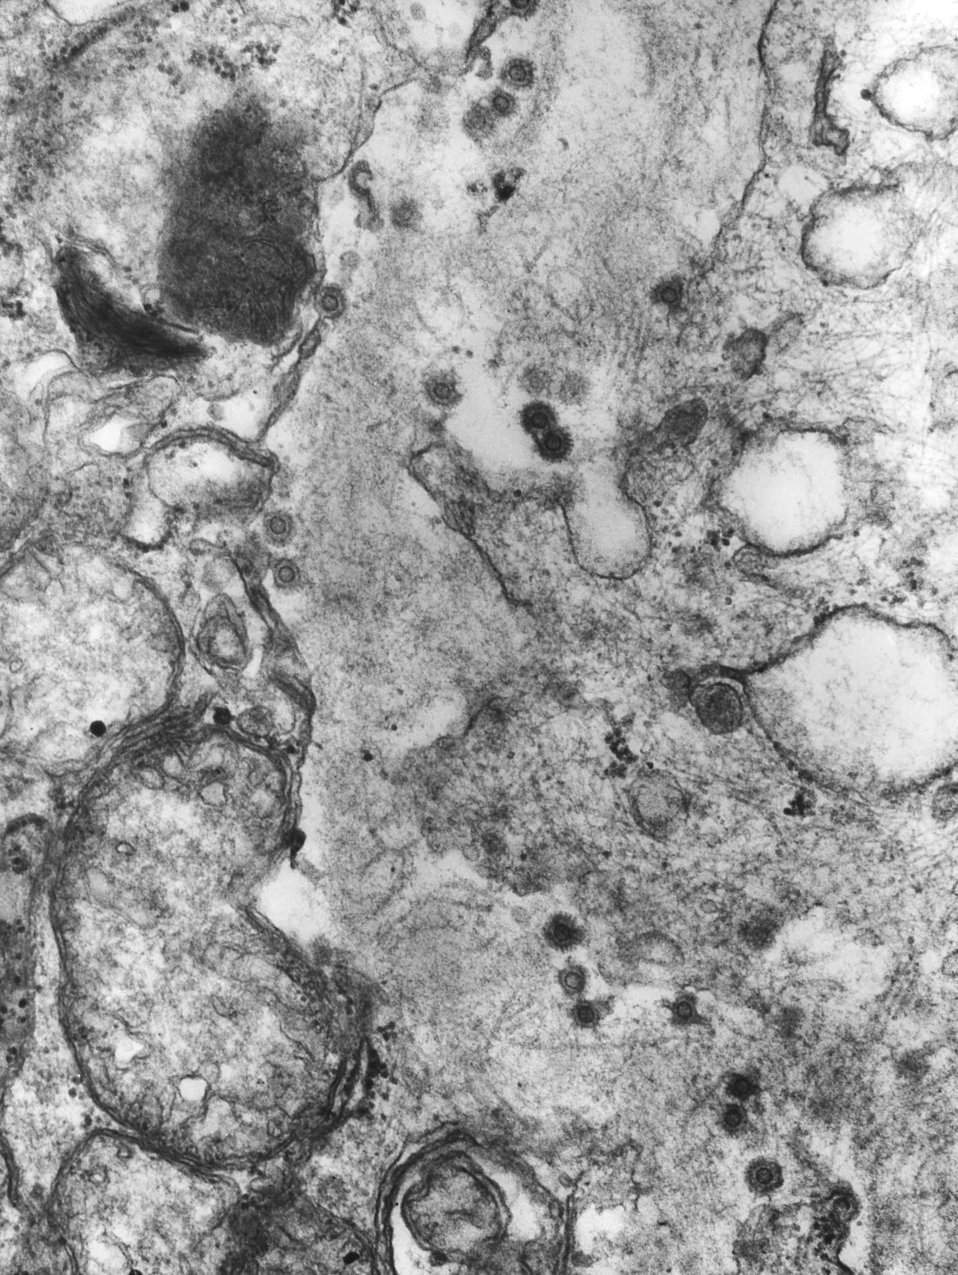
This negatively-stained transmission electron micrograph (TEM) revealed the presence of numerous doulble-stranded, full-length DNA-containing (dsDNA) spumavirus, or foamyvirus virions. One of the identifying morphologic characteristics displayed by these virions is the spikey nature of their protective proteinaceous capsid, which is a feature evident in this TEM.